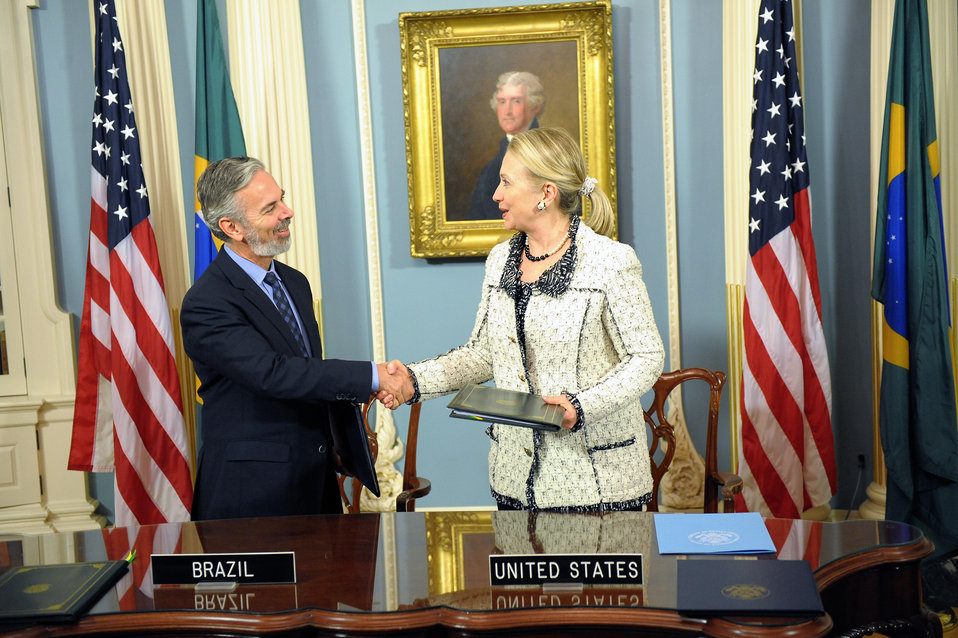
Secretary Clinton and Brazilian Foreign Minister Patriota Shake Hands

U.S. Secretary of State Hillary Rodham Clinton and Brazilian Foreign Minister Antonio Patriota shake hands after signing the U.S.-Brazil Aviation Partnership Memorandum at the U.S. Department of State in Washington, D.C., on April 9, 2012.